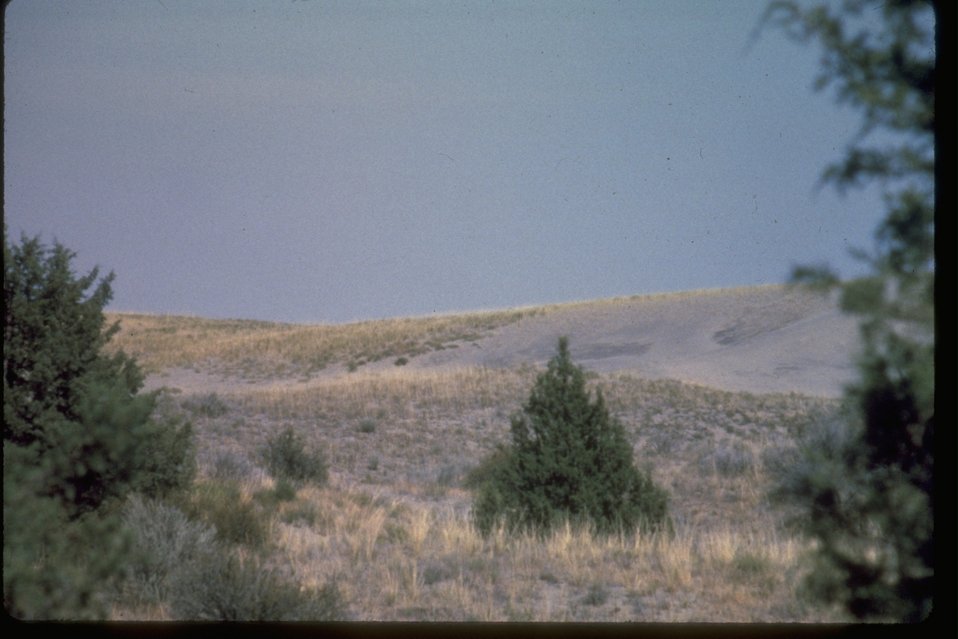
Juniper Dunes Wilderness, Franklin County, Washington.